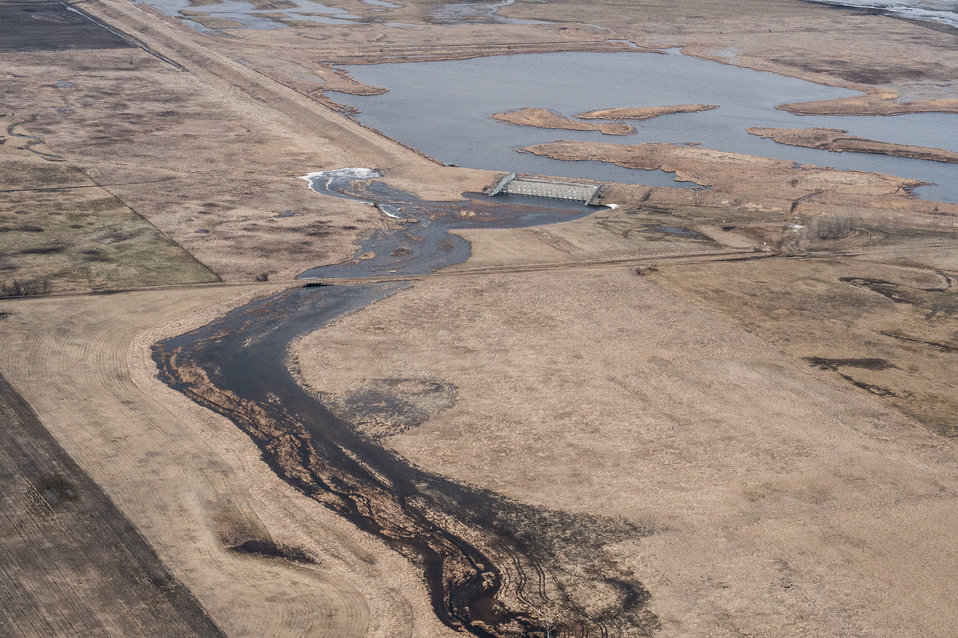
English Coulee Watershed Dam, a Public Law PL83-566 Small Watershed Program, in Grand Forks County, ND, on Tuesday, April 30, 2013.